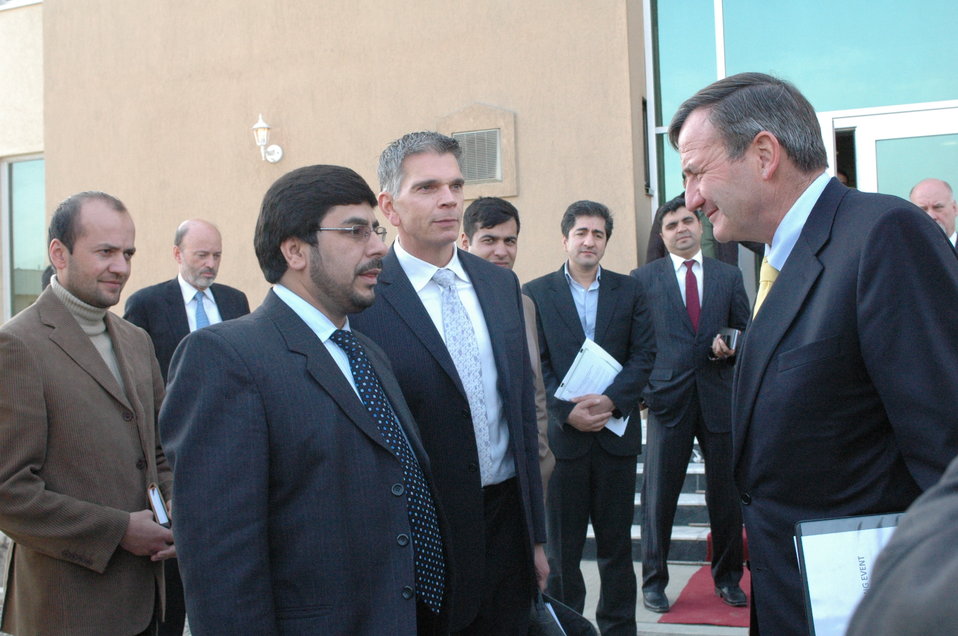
Community Based Stabilization Grants Ceremony, December 7, 2010